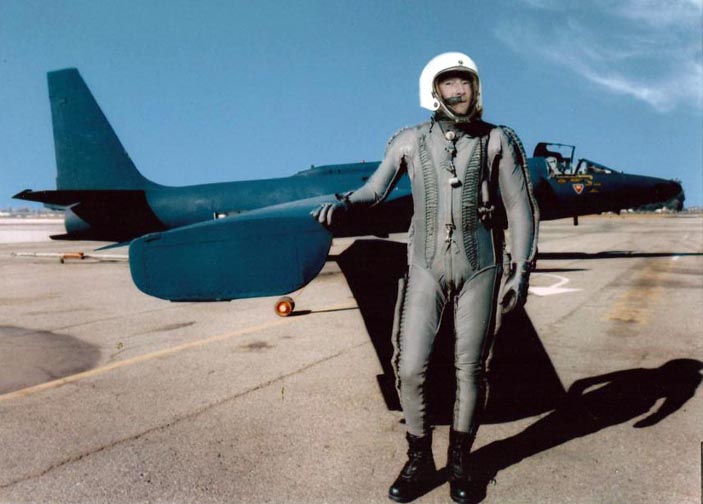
U-2 Dragon Lady

Retired Lt. Col. Tony Bevacqua poses next to the wings of an original U-2 Dragon Lady during the late 1950s. Colonel Bevacqua was one of the first U-2 pilots in the Air Force.